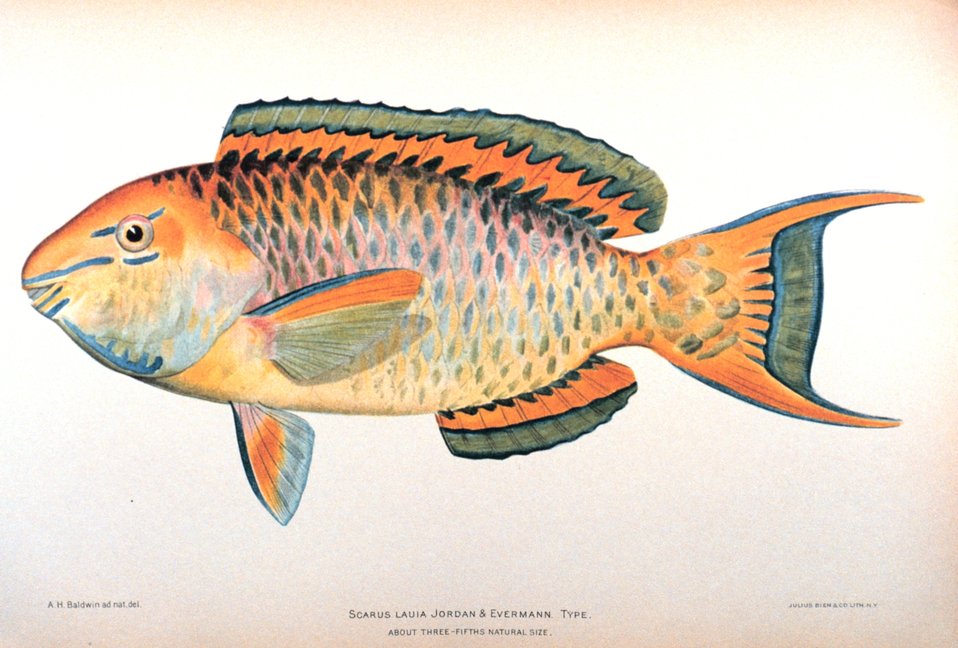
Scarus lauia Jordan & Evermann. Type. In: 'The Shore Fishes of the Hawaiian Islands, with a General Account of the Fish Fauna', by David Starr Jordan and Barton Warren Evermann. Bulletin of the United States Fish Commission, Vol. XXIII, for 1903. Part I. P. 574, Plate XLIII.